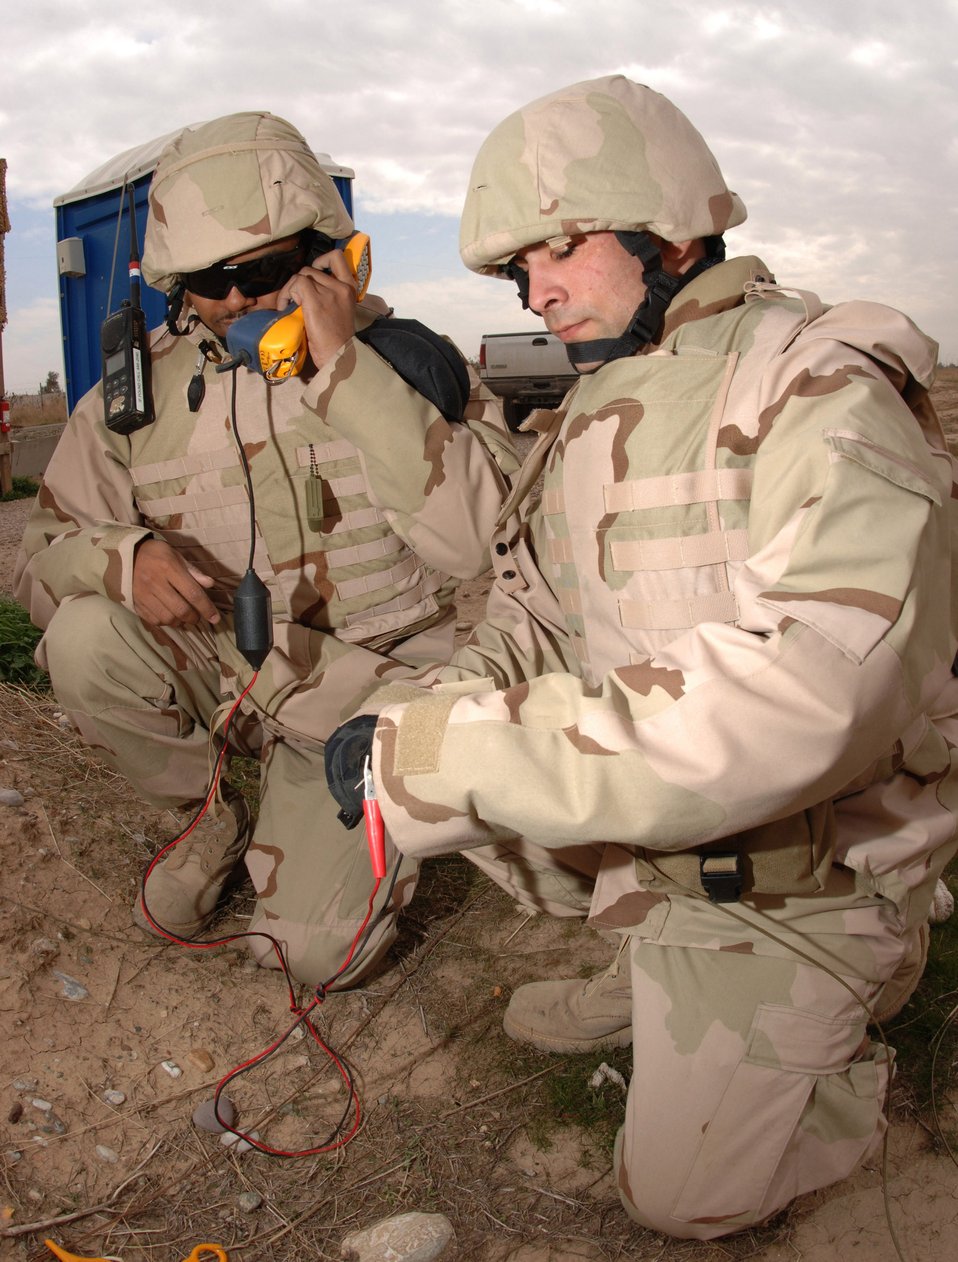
Cyberspace career fields, training paths, badge proposed

Communications and Information specialists like Senior Airman Kenneth Hawkins and Airman 1st Class Ryan Gall, seen here testing cutfield wires for a dial tone in Iraq, will soon see changes to their job requirements as the Air Force proposes 15 new cyberspace career fields. These voice systems technicians are just two of the approximately 30,000 active-duty members who'll be affected by the changes.